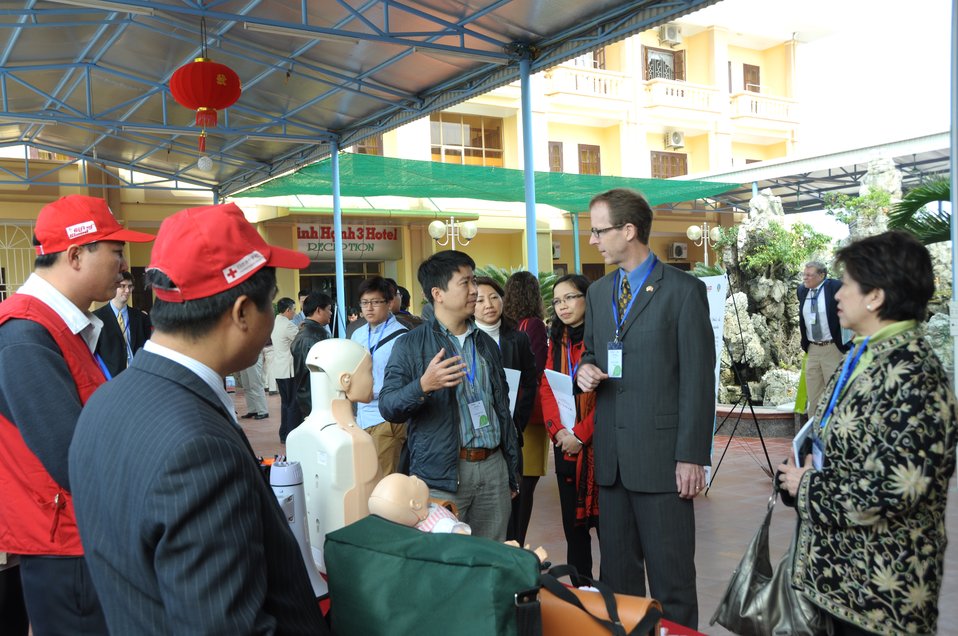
USAID launches the Vietnam Forests and Deltas project in Nam Dinh province.